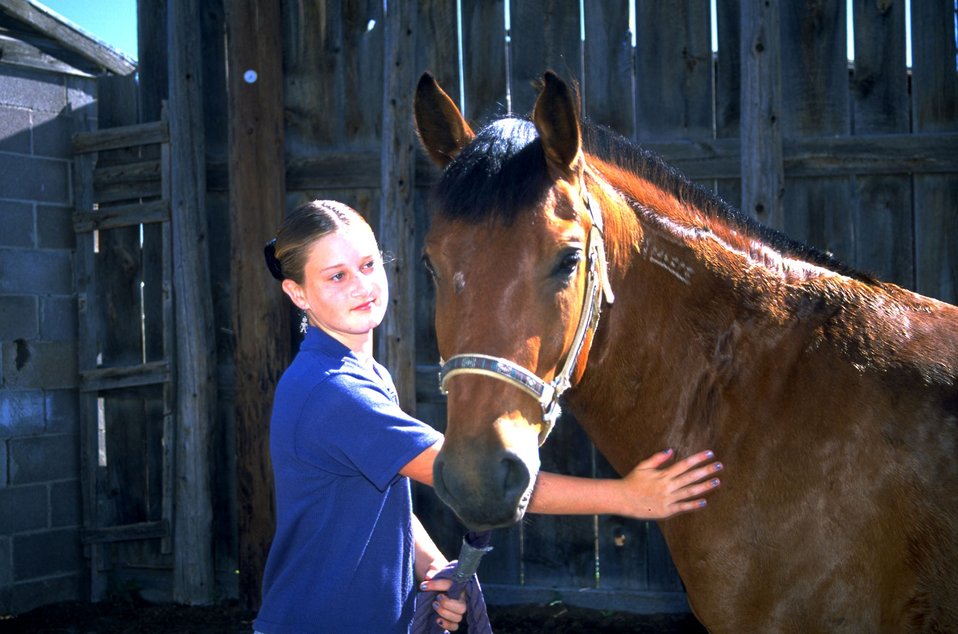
Adopted Horse, gentled